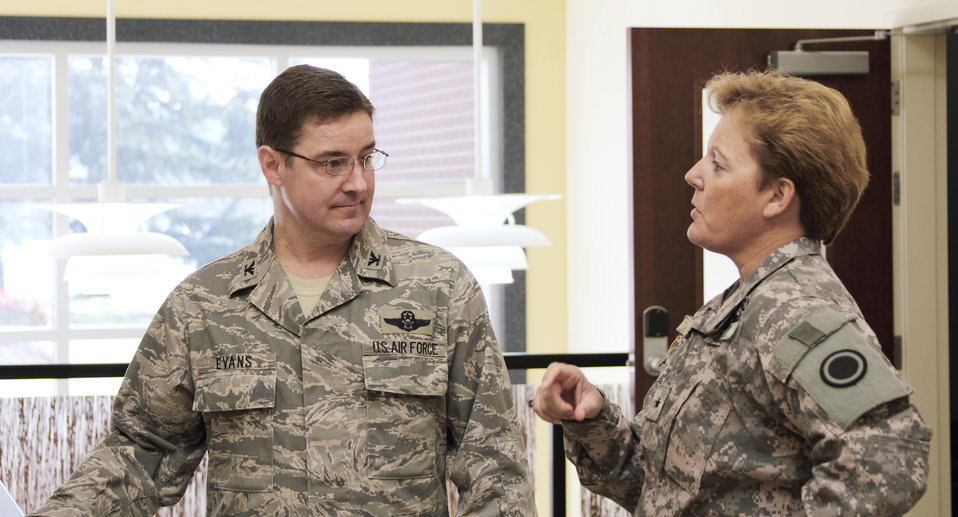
Air Force, Army officials partner to improve interoperability

Col. Rob Evans welcomes Brig. Gen. Heidi Brown during her visit to the 1st Air Support Operations Group and the 5th Air Support Operations Squadron March 30, 2010, at Joint Base Lewis-McChord, Wash. Colonel Evans is the I-Corps air liaison officer and the 1st ASOG commander. General Brown is the I-Corps deputy commanding general for sustainment and the senior air defense officer.